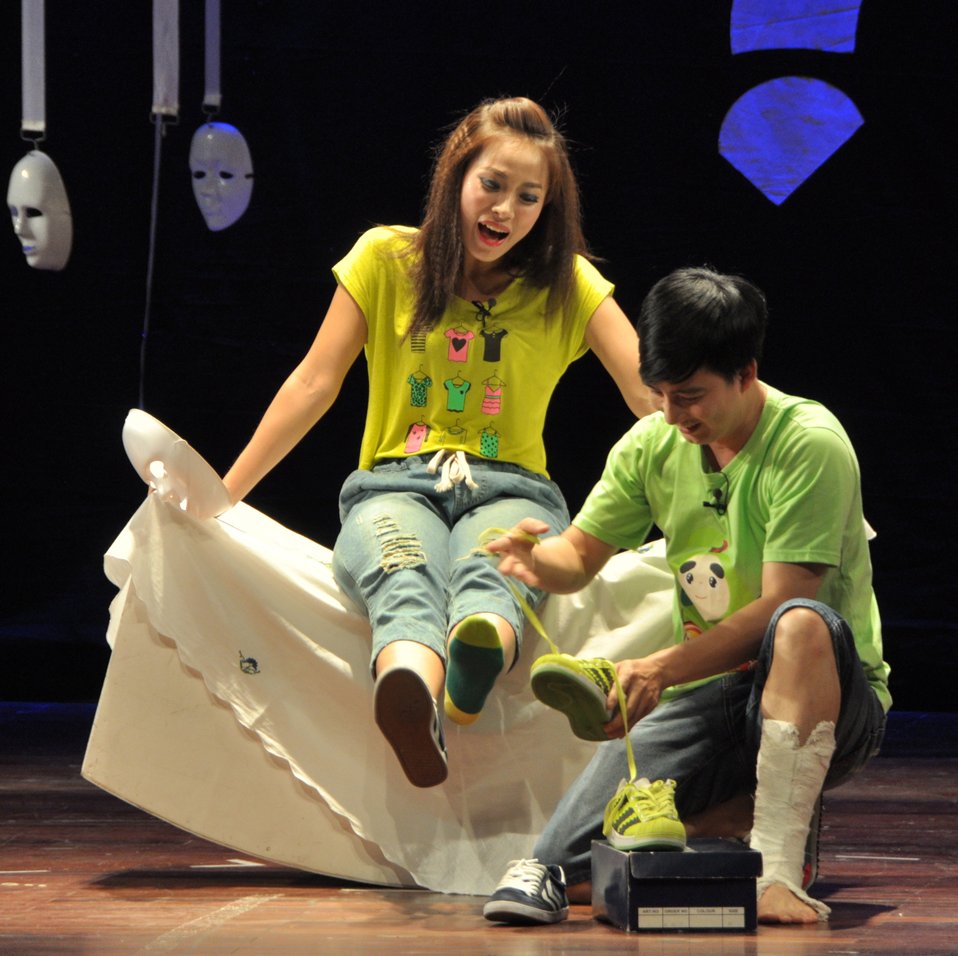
PEPFAR Musical Questions and Exclamations

Hanoi, May 17, 2013